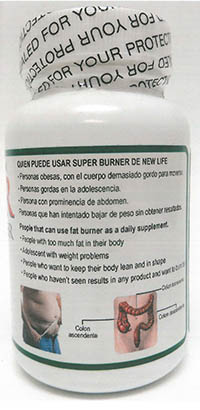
RECALLED – Dietary Supplement

March 25, 2014 – Product Recall – New Life Nutritional Center Issues Voluntary Nationwide Recall of Super Fat Burner, Maxi Gold and Esmeralda Dietary Supplements Due to the Presence of Undeclared Sibutramine and Phenolphthalein.